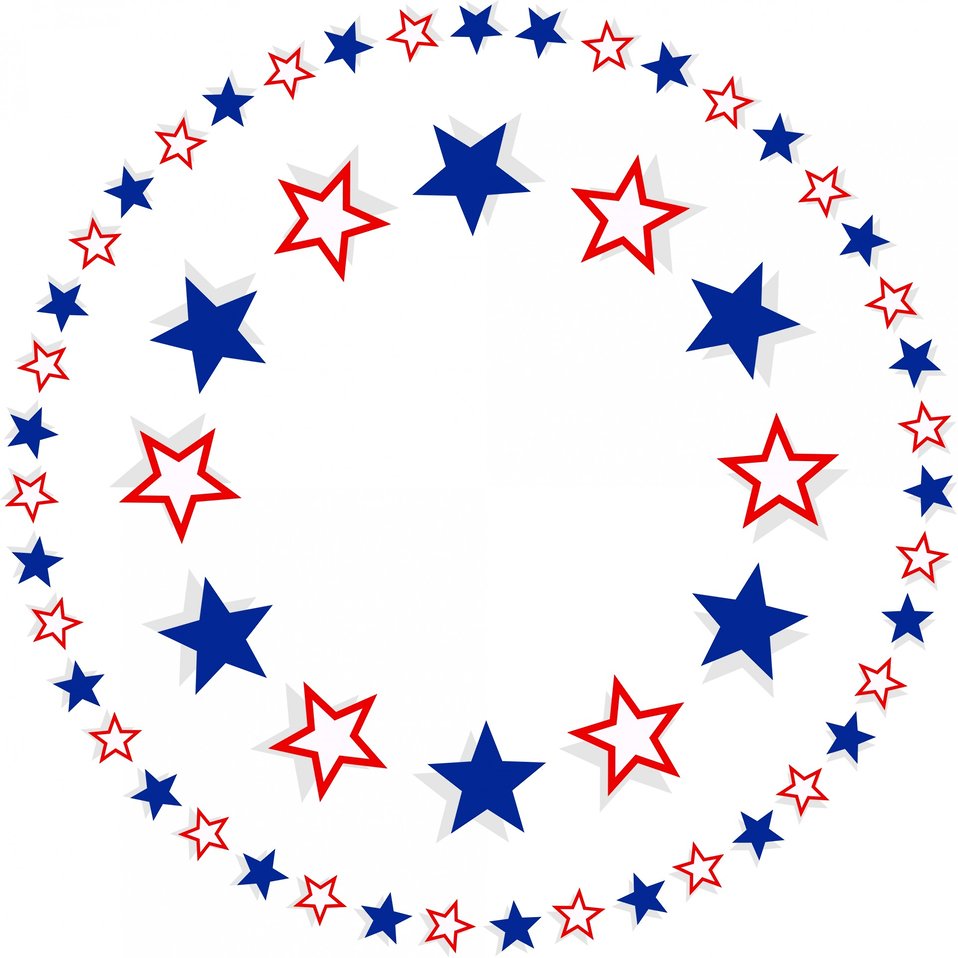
Patriotic star border

American red and blue stars round border clipart..